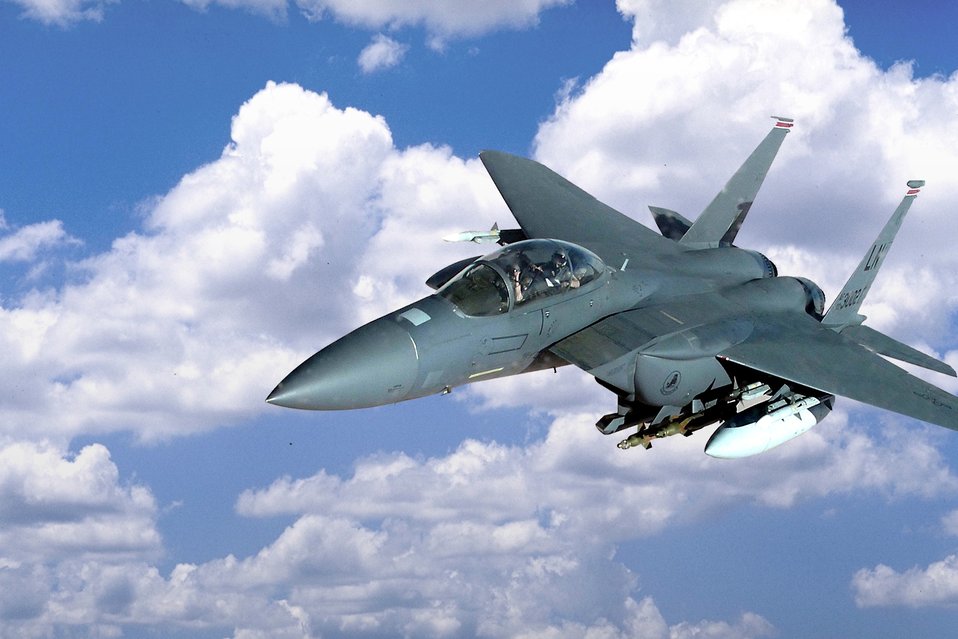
March 2 airpower: F-15Es provide show of force

F-15E Strike Eagles, such as this one, provided a show of force in support of a coalition convoy experiencing vehicle problems in an area known to have high enemy activity near Shamikor, Iraq, March 1.